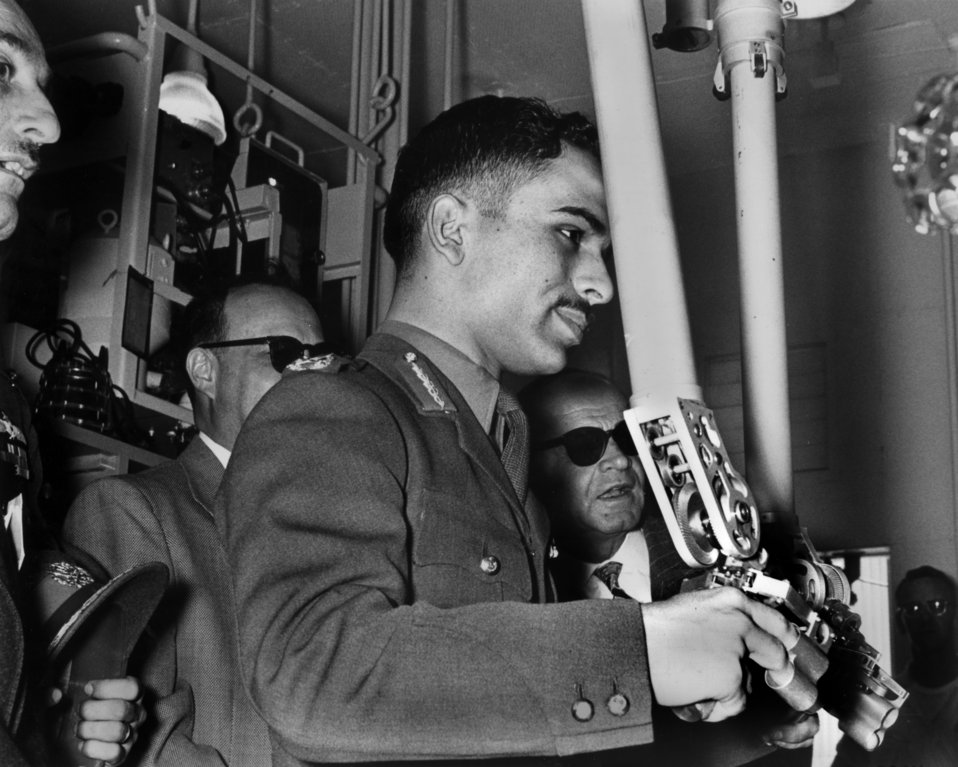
King Hussein of Jordan visit to Oak Ridge

59-0239-d16 DOE photo by Ed Westcott

King Hussein of Jordan visit to Oak Ridge National Lab. Oak Ridge Tennessee 3-31-1959